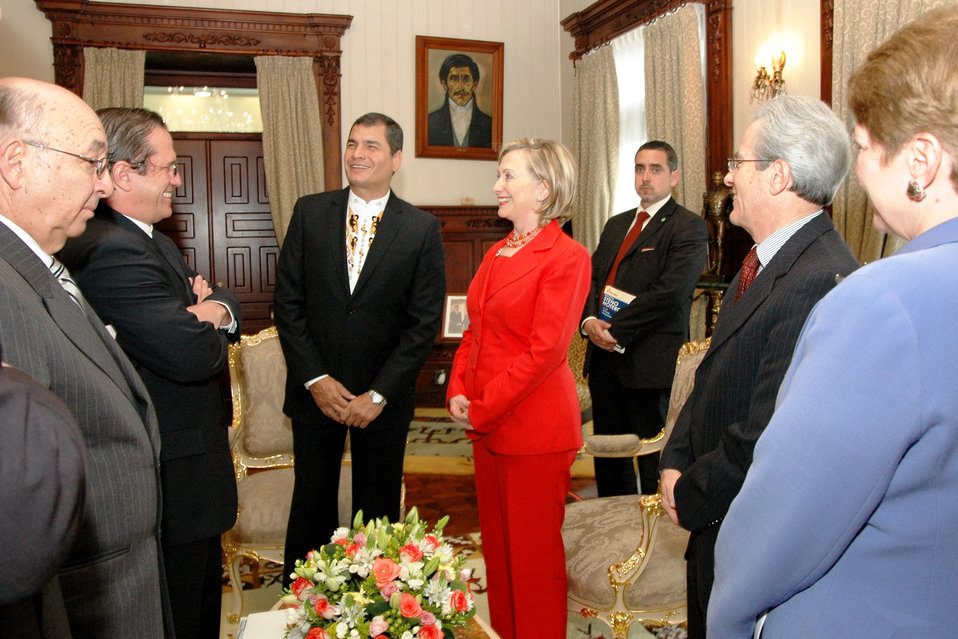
Secretary Clinton Is Greeted By Ecuadorian President Rafael Correa, Ecuadorian Foreign Minsiter Ricardo Patino, and Ecuadorian Ambassador to the United States Luis Gallegos

U.S. Secretary of State Hillary Rodham Clinton (center), U.S. Assistant Secretary of State for Western Hemisphere Affairs Arturo Valenzuela (2nd from right), and U.S. Ambassador to Ecuador Heather Hodges (far right) are greeted by Ecuadorian President Rafael Correa (third from left), Ecuadorian Foreign Minsiter Ricardo Patino (second from left), and Ecuadorian Ambassador to the United States Luis Gallegos (far left), Ecuadorian FoMin Ricardo Patino in Quito, Ecuador, on June 8, 2010.